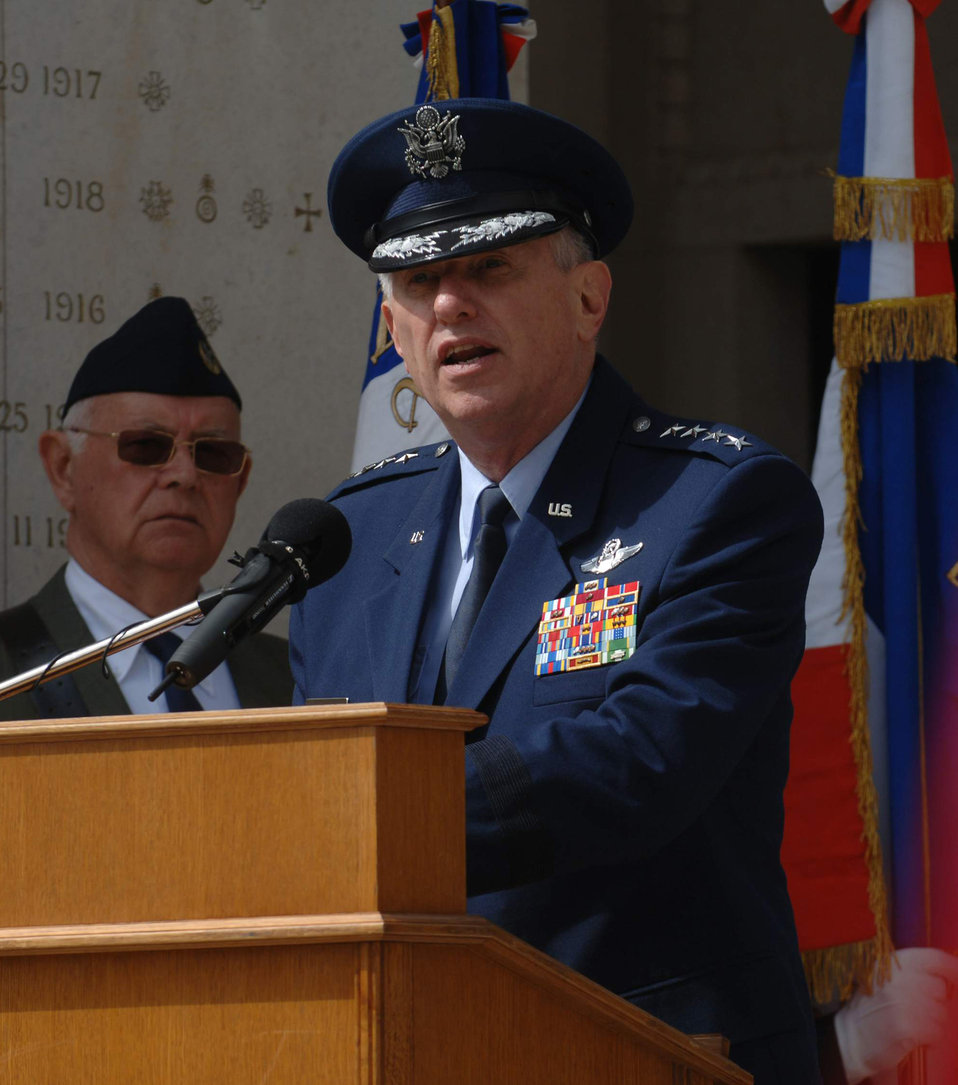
America's first combat aviators memorialized

U.S. Air Forces in Europe Commander, Gen. Roger A. Brady, speaks at the Lafayette Escadrille memorial ceremony outside of Paris May 23.